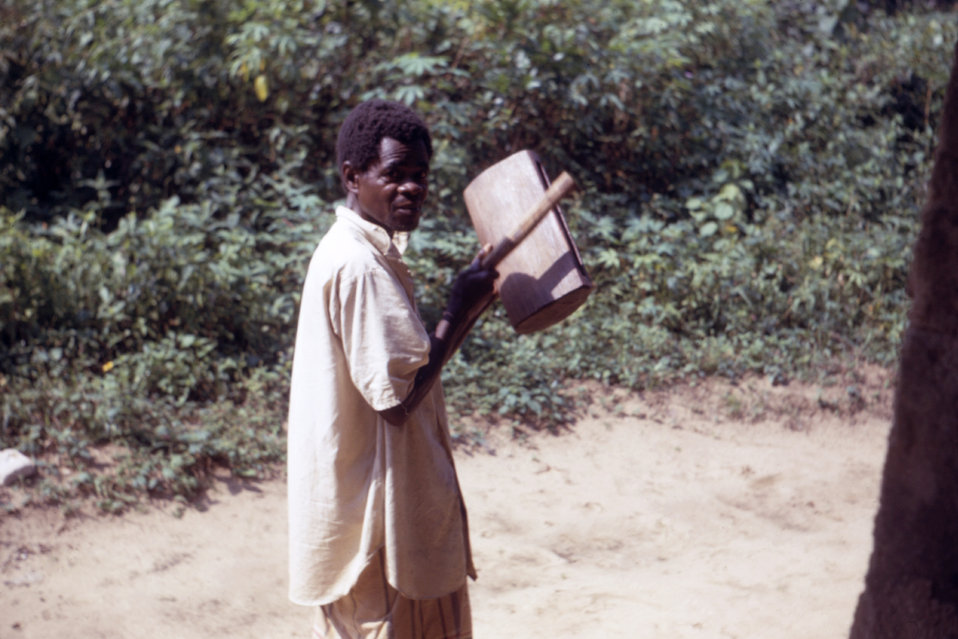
This Nigerian volunteer was using the sound of a drum to announce to refugees within a Biafran war relief camp that food was ready for distribution.